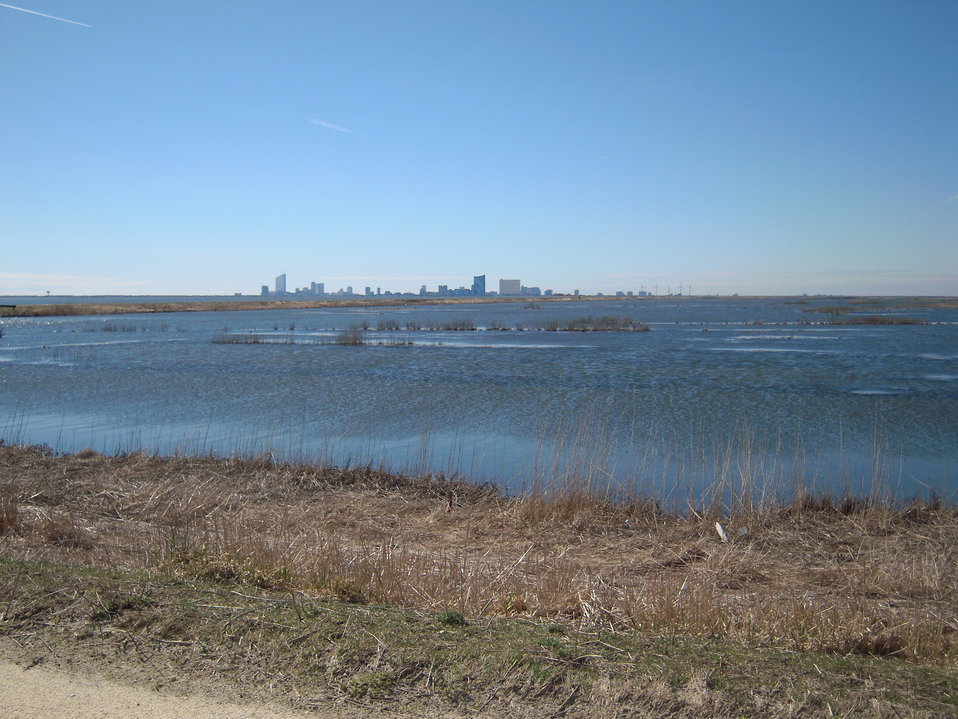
Refuge Impoundment

Impoundment at E.B. Forsythe NWR with Atlantic City in the background.